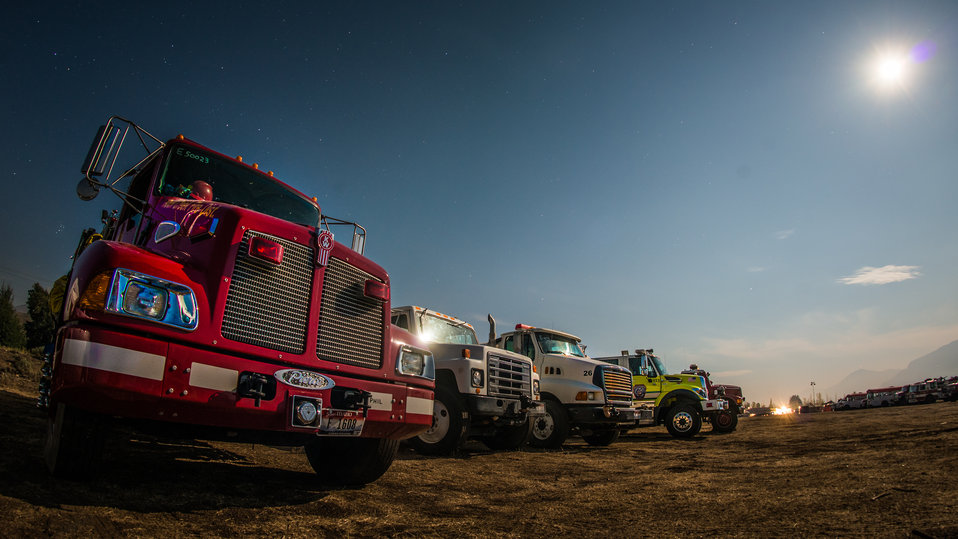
A bright moon shines on the wildlands fire engines of various types and models, that have come from across the western region, are now parked for the night as their Engine Crews sleep at the Beaver Creek Fire, Incident Command Post campgrounds in Hailey, ID, on Tuesday, Aug 20, 2013.